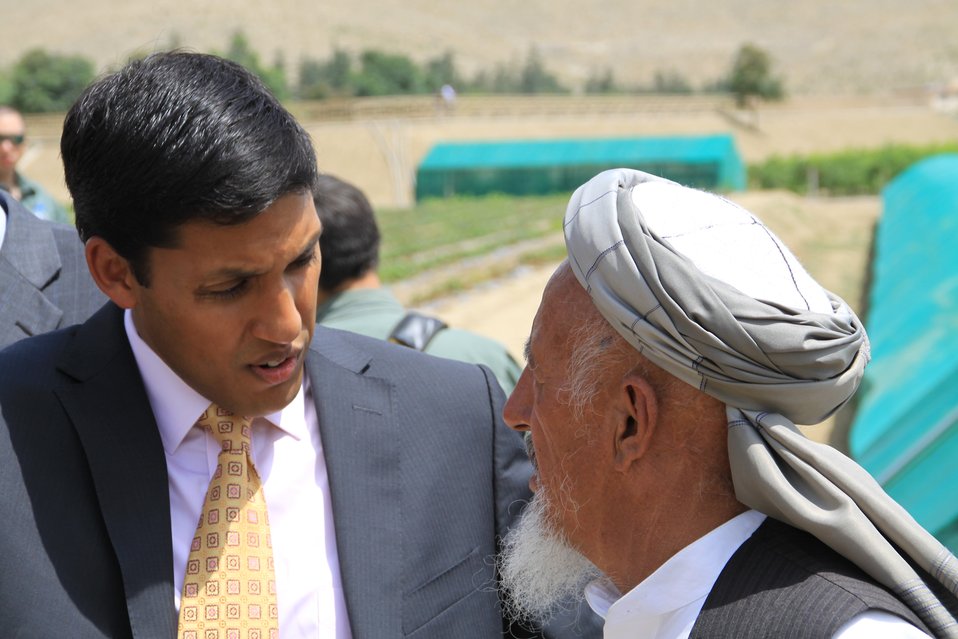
Badam Bagh Farm